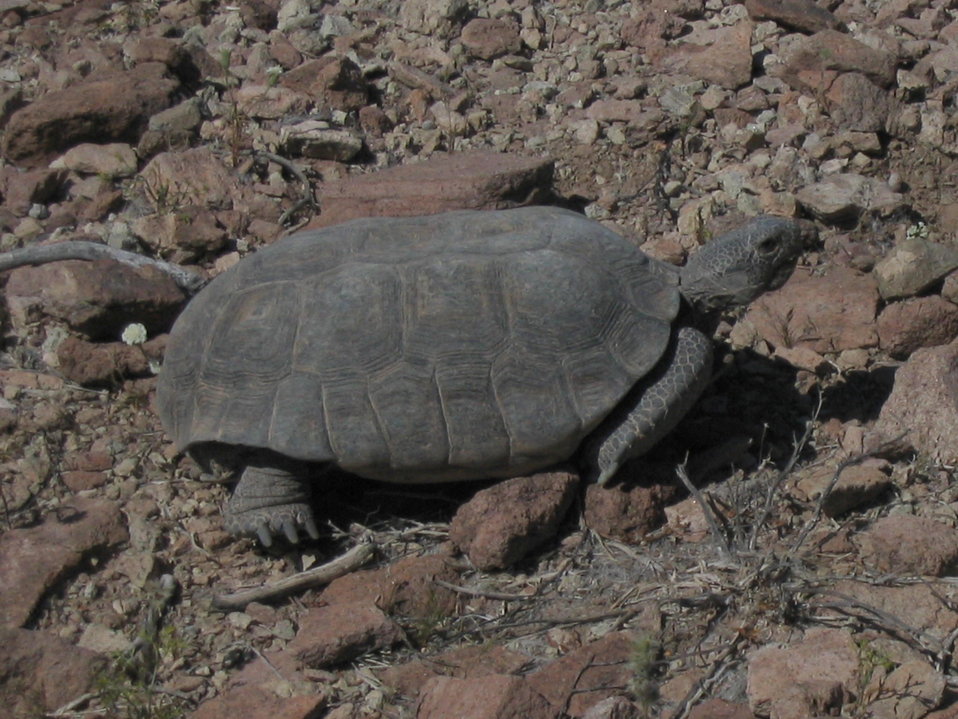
Mojave Desert Tortoise (Gopherus agassizii)

Desert tortoise (Gopherus agassizii) commonly known as the Mojave desert tortoise.